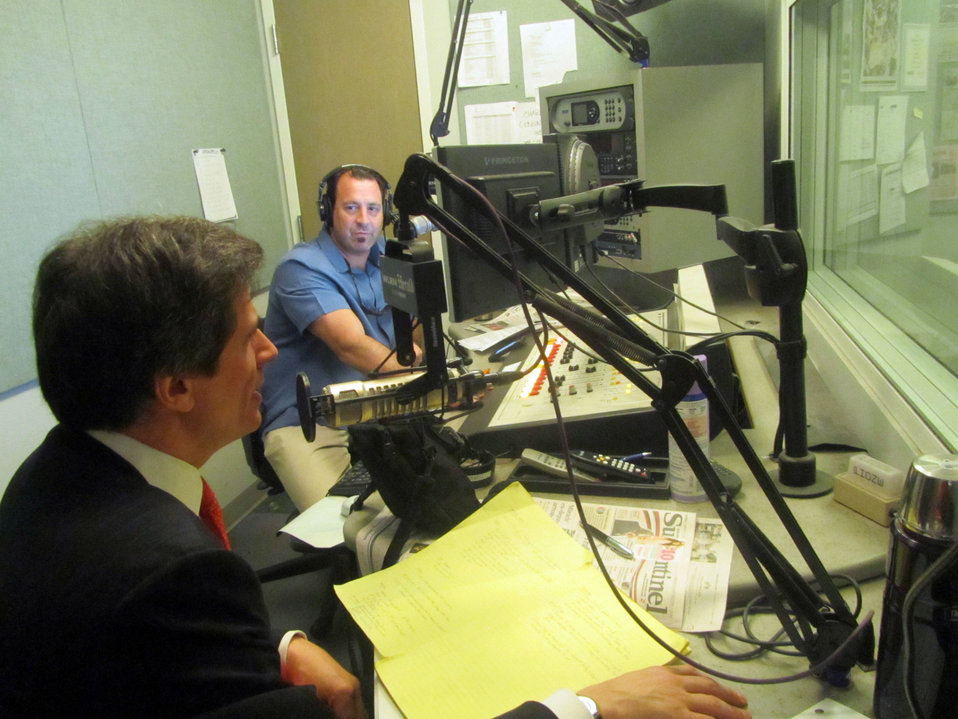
Assistant Secretary Fernandez With WLRN Miami Herald News Host Philip Latzman

Assistant Secretary of State for Economic and Business Affairs Jose W. Fernandez participates in an interview with WLRN Miami Herald News host, Philip Latzman, where he discusses the continued partnership between the Americas in Miami, Florida, February 6, 2013.